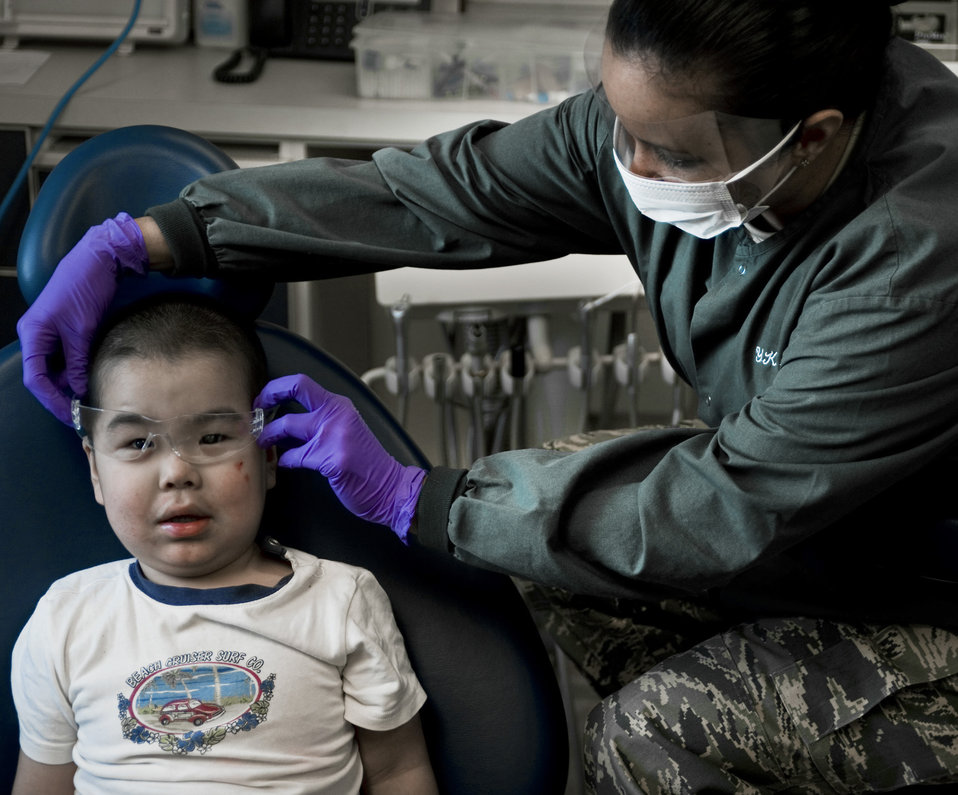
Operation Arctic Care visits Kwethluck village

Tech. Sgt. Kristie Subieta, a dental hygenist from Tinker Air Force Base, Okla., adjusts protective eye glasses on Dylon Sergie, 2, March 10 at a health clinic in Kwethluk, Alaska. A joint military medical team deployed to Kwethluk, a small village in Western Alaska, in support of Operation Arctic Care 2009. This year's Navy-led mission had teams in 11 villages in Alaska's Yukon-Kuskokwim Delta region providing medical, dental and veterinary support at no cost to Alaskan natives.